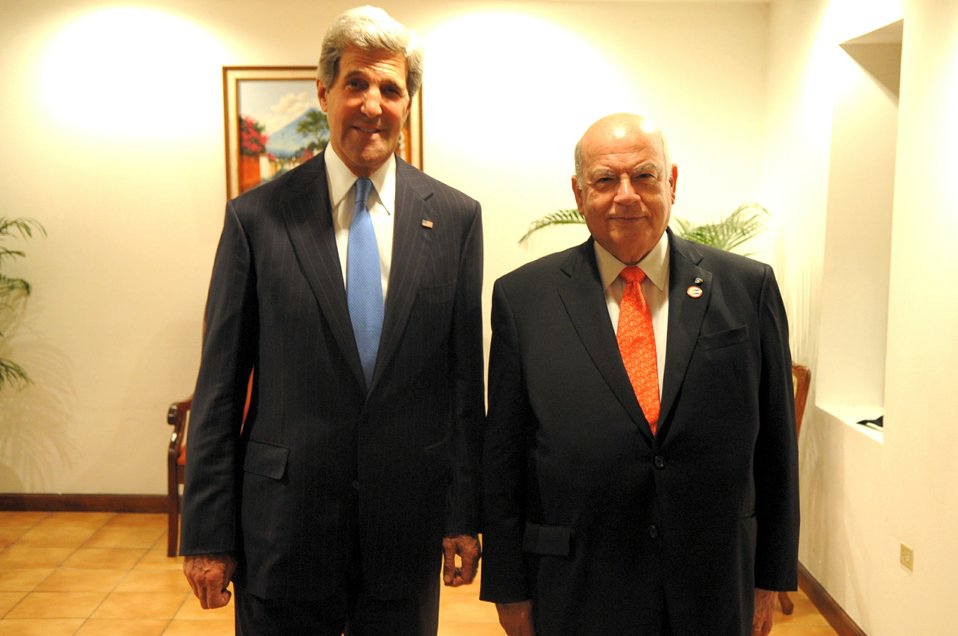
Secretary Kerry Meets With OAS Secretary General Insulza

U.S. Secretary of State John Kerry meets with Organization of American States Secretary General José Miguel Insulza during a break in OAS meetings in Antigua, Guatemala, on June 4, 2013.